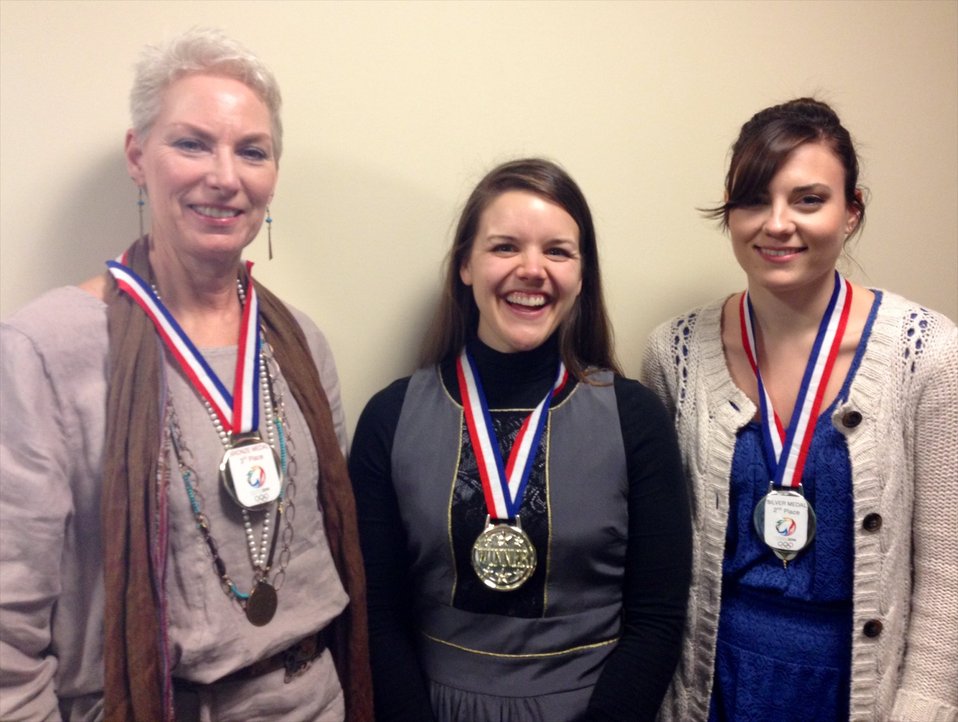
National Archives Food Olympics winners - Karen Shaw, Jessica Hopkins, Joanna Marsh; Location: National Archives at Kansas City, Kansas City, MO